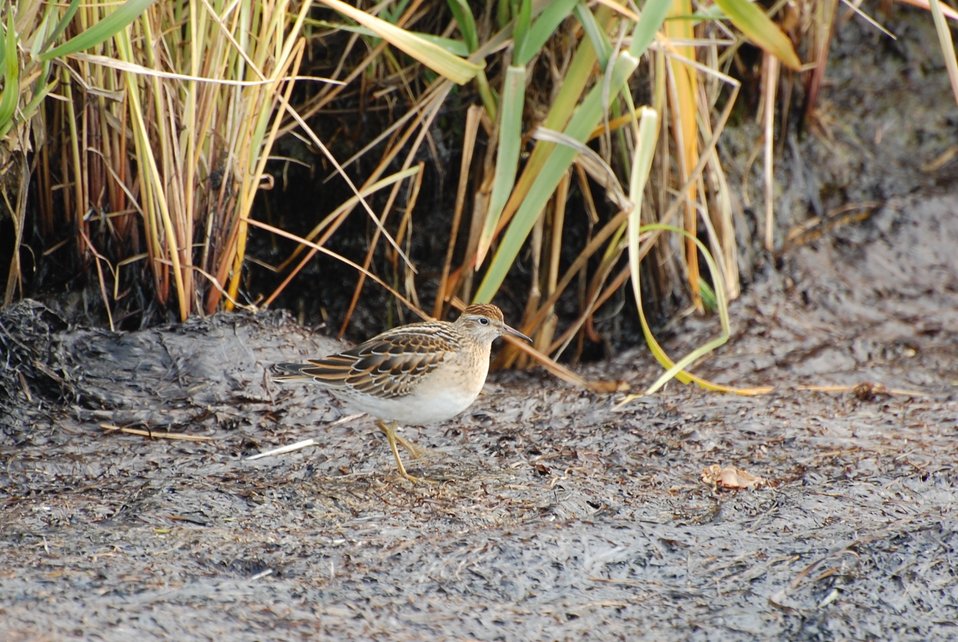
Juvenile Sharp-tailed Sandpiper

Izembek Lagoon, Izembek National Wildlife Refuge
Photo by Kristine Sowl,
USFWS, Public Domain